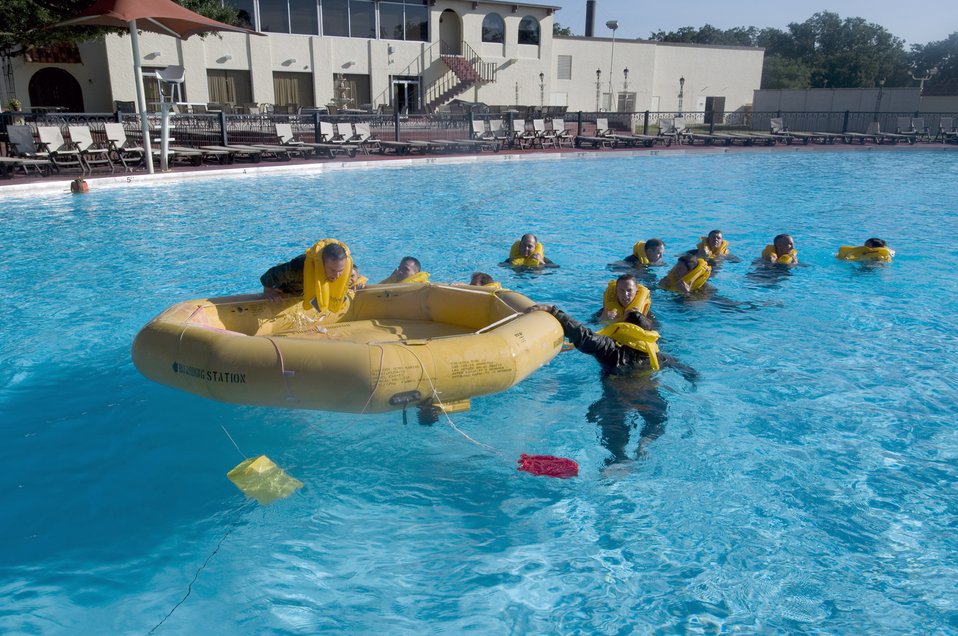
Water survival skills

T-1A Jayhawk instructor pilots maneuver a nine-person raft as they practice water survival skills during refresher training Aug. 6, 2010, at Randolph Air Force Base, Texas.